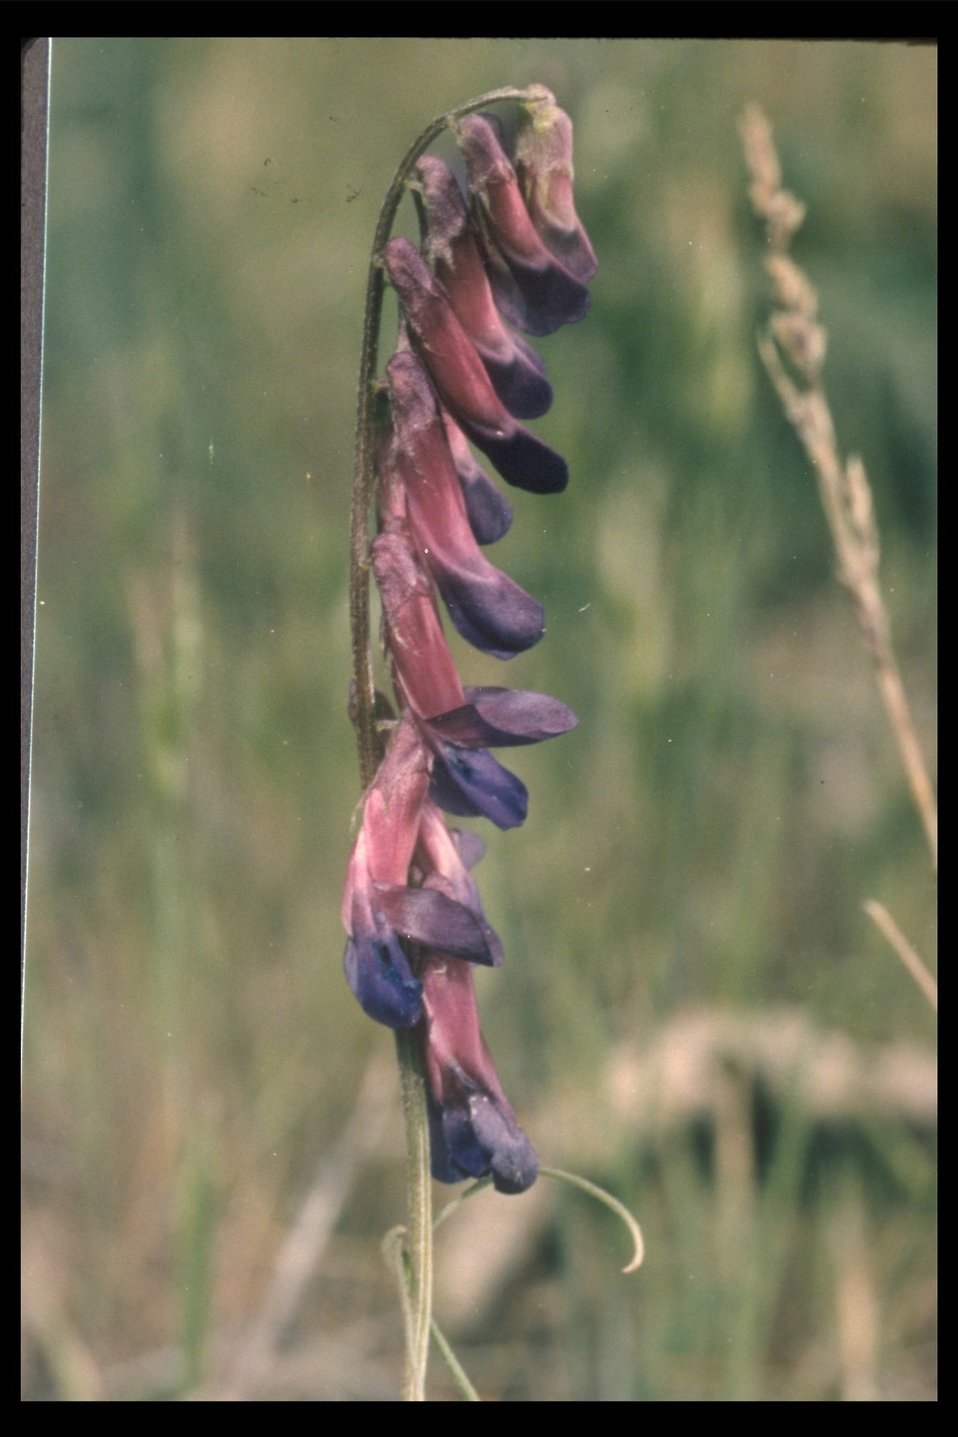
Hairy Vetch (Vicia villosa) at Lower Table Rock.